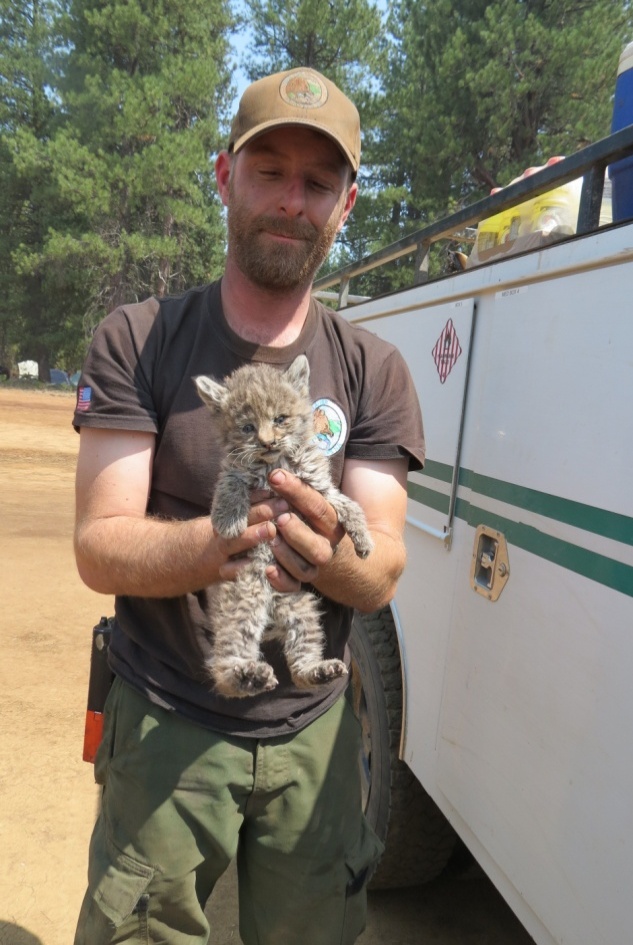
2

Mad River Hand Crew superintendent Tad Hair found “Chips” a Bobcat kitten wandering along the side of the road, alone and dazed while conducting patrol and mop-up operations on the north end of the Chips Fire burning on the Plumas and Lassen National Forests in Northern California on Aug. 25, 2012. The Bobcat kitten was transported to the Lake Tahoe Wildlife Care group (LTWC). The LTWC is a non-profit organization, run by volunteers, “whose function is to raise, rehabilitate and release orphaned and injured wild birds and animals.”